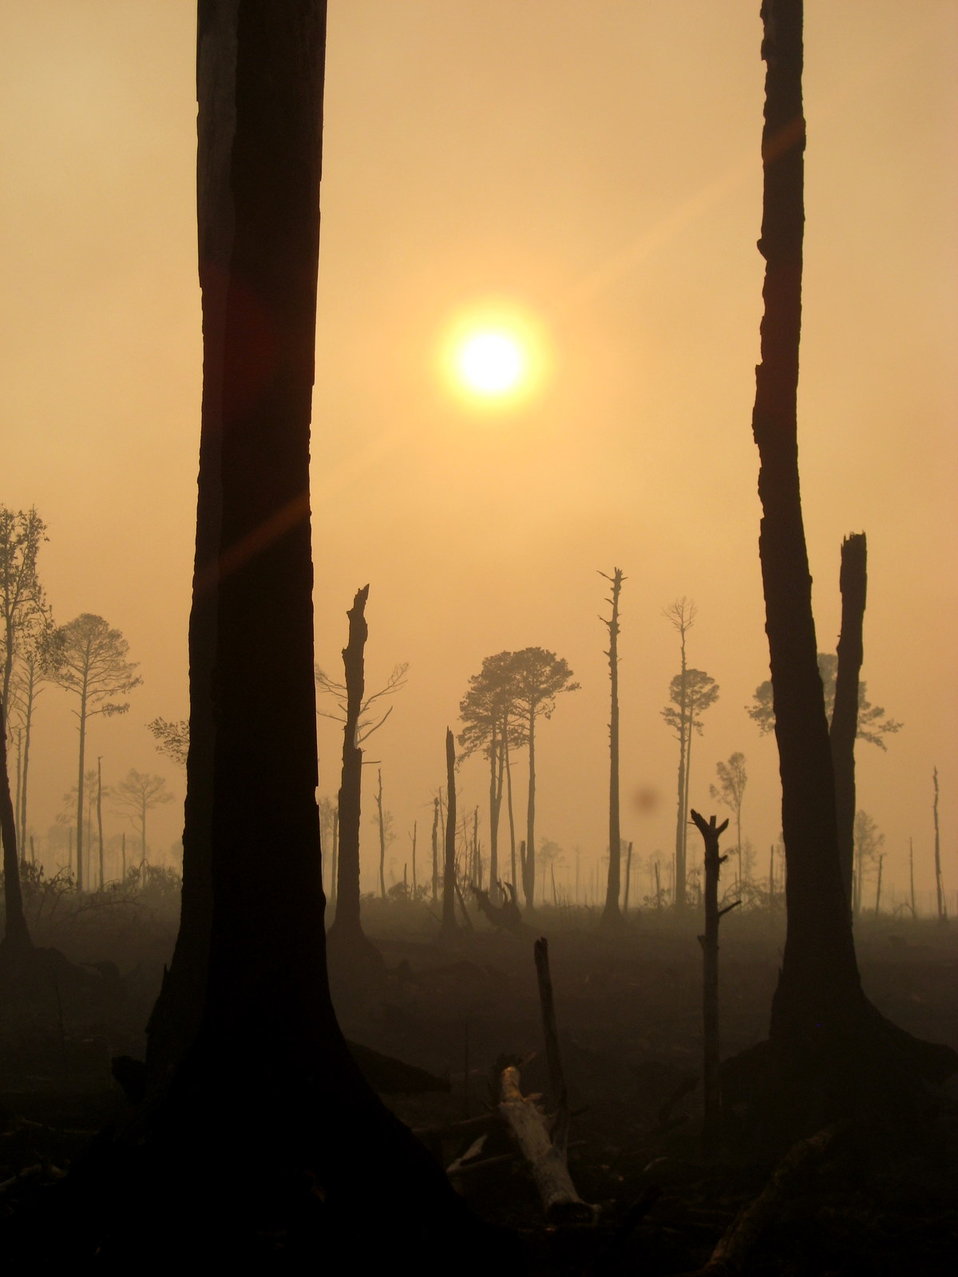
Photo of the week - Sunlight through the haze

Photo of the week 9/12/2011

Thick smoke and burned trees provide a surreal beauty in the wake of the Lateral West Wildfire burning in Great Dismal Swamp National Wildlife Refuge, Suffolk, VA, August 2011.